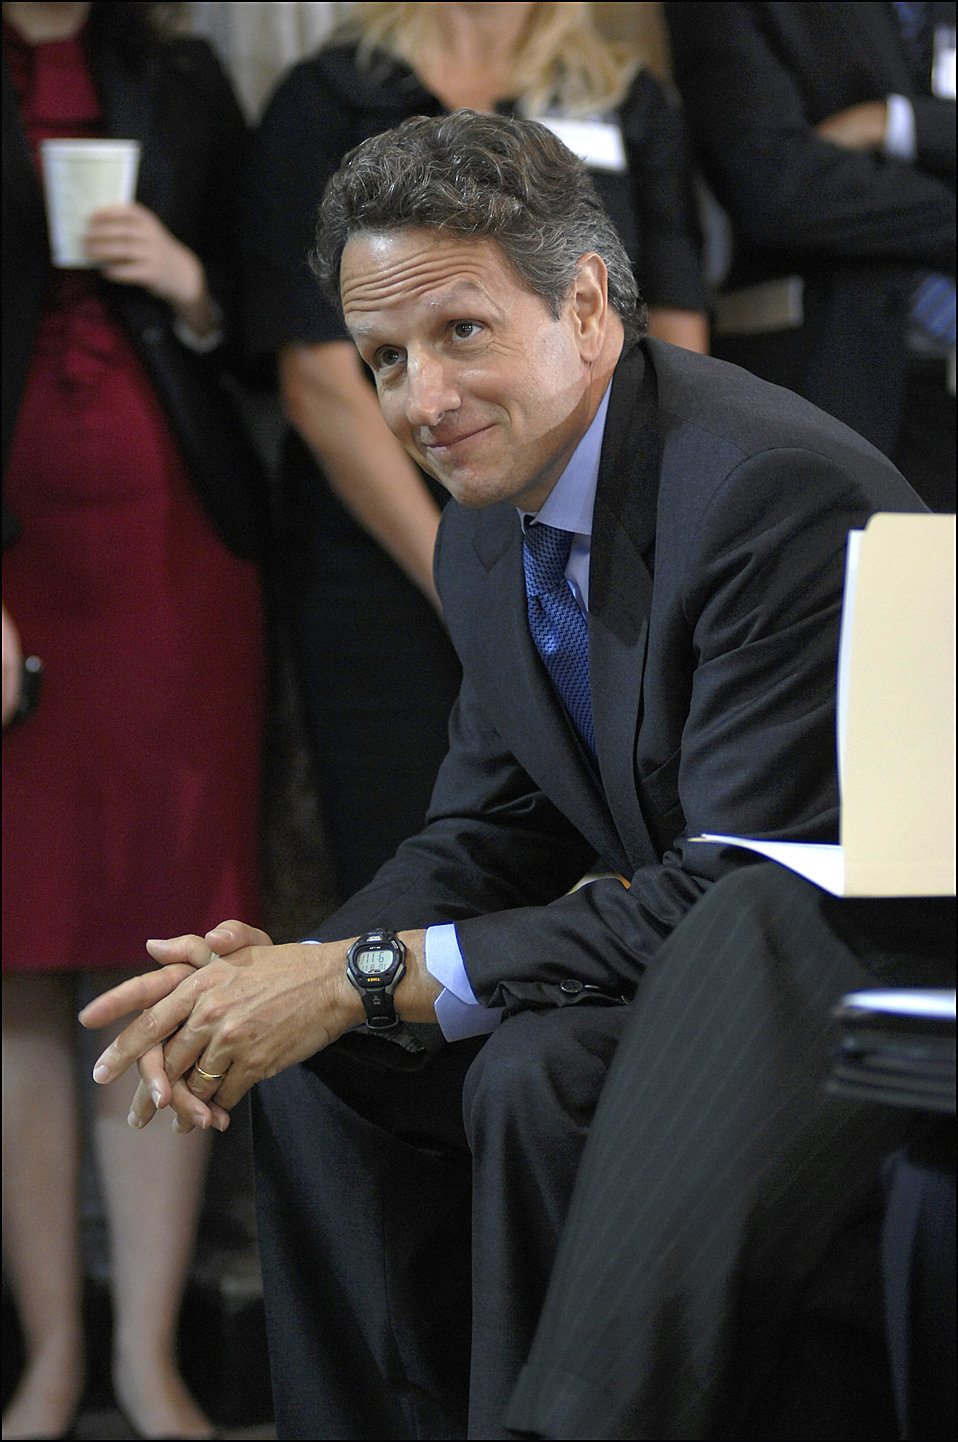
Conference on the Future of Housing Finance, 08/17/2010

Secretary Geithner watching the panel hosted by HUD Secretary Donovan on Housing Finance Reform and Broader Housing Policy Goals at the Conference on the Future of Housing Finance.